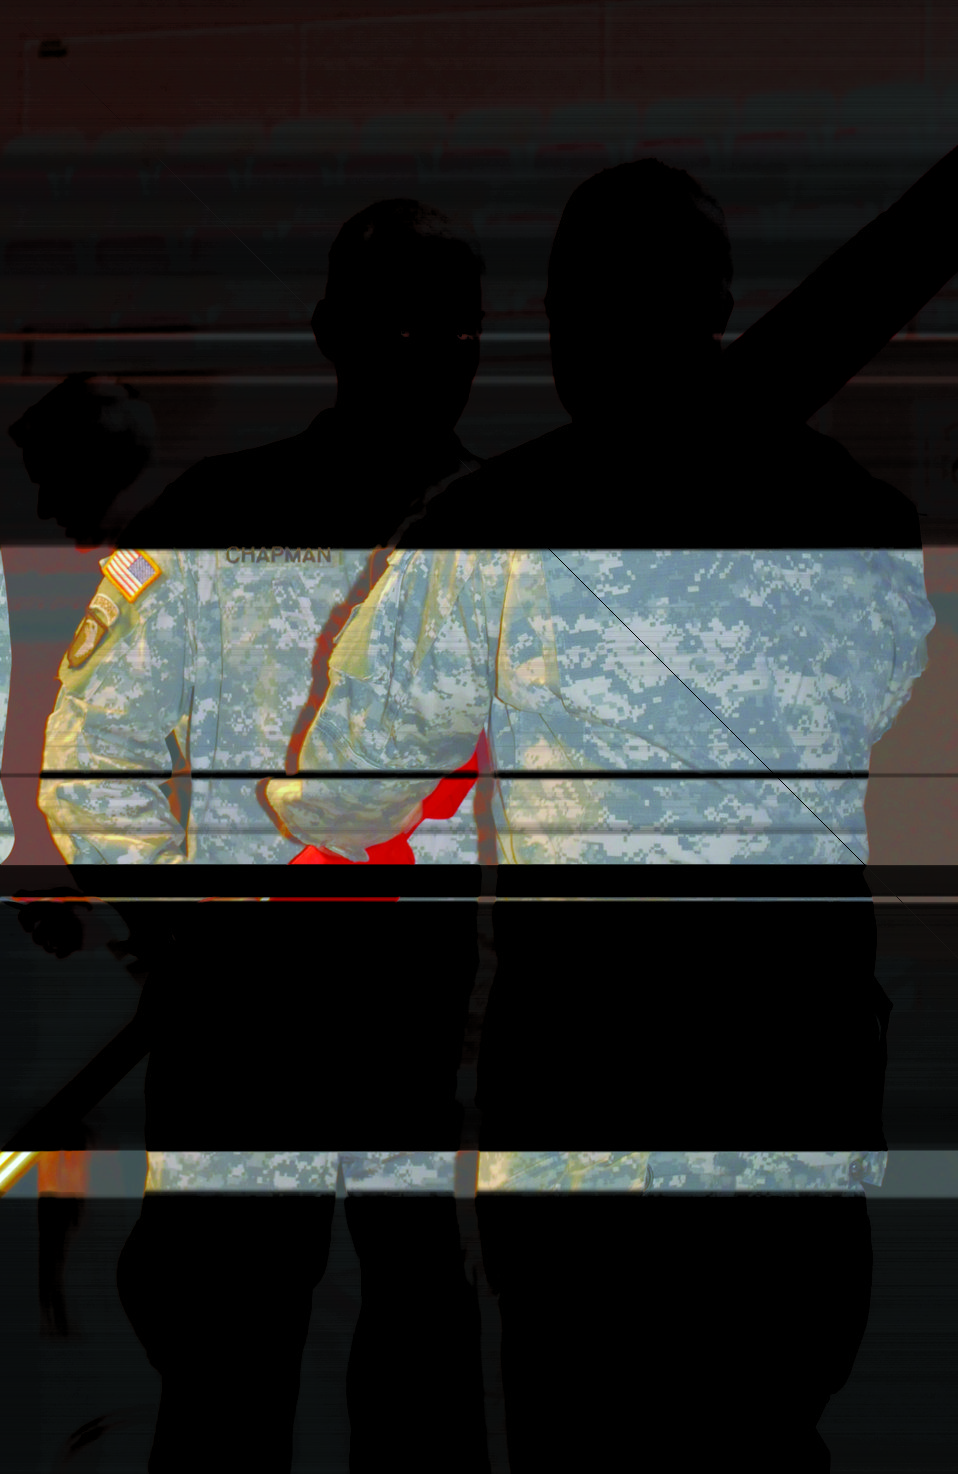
Passing the Colors

Col. Thomas C. Chapman (left) passes the Sacramento District’s colors to Brig. Gen. Scott F. “Rock” Donahue, South Pacific Division Commander, during a change of command ceremony for the U.S. Army Corps of Engineers Sacramento District at the Sacramento Memorial Auditorium in Sacramento, Calif., July 27.